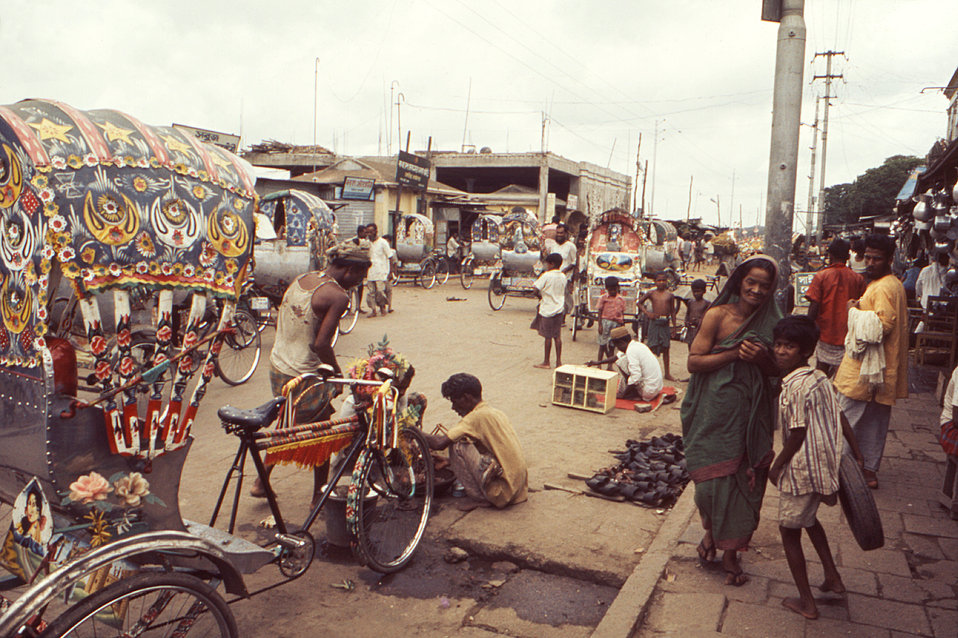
Photographed sometime in the early 1970s, during the worldwide smallpox eradication campaign, this image depicted a street scene on one of the streets in a small town in Bangladesh, which is located in the southern region of Nepal.